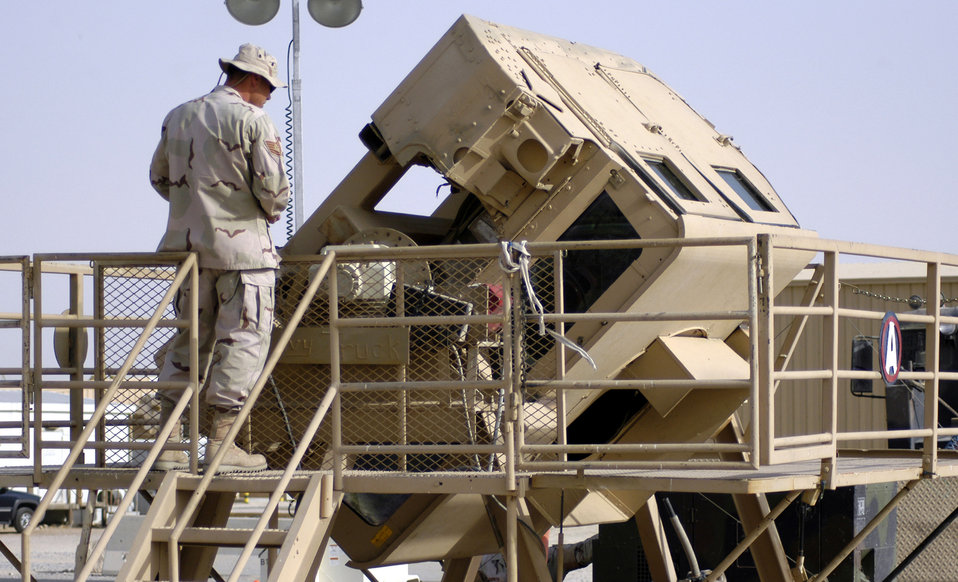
Security forces members battle HEAT

Tech. Sgt. Jeffry Prough operates the Humvee egress assistance trainer on July 17 at a forward operating base in Southwest Asia. The trainer aids military members with instruction on how to escape from a Humvee that has rolled over and how to avoid such accidents. Sergeant Prough is assigned to the 386th Expeditionary Security Forces Squadron.